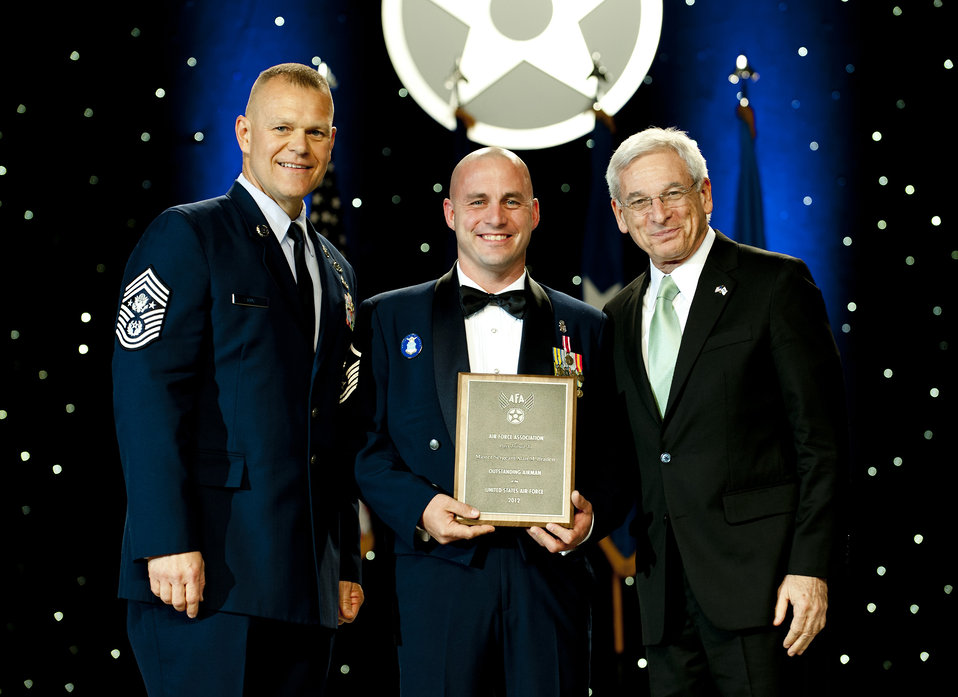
12 Outstanding Airmen of the Year

Chief Master Sgt. of the Air Force James Roy, left, and Sandy Schlitt, right, Air Force Association chairman of the board, present a plaque to Master Sgt. Alan Braden during the 12 Outstanding Airmen of the Year reception and awards dinner in Washington, D.C., Sept. 17, 2012. The recipients were recognized for superior leadership, job performance, community involvement and personal achievements. Braden is with the 88th Force Support Squadron from Wright-Patterson Air Force Base, Ohio.